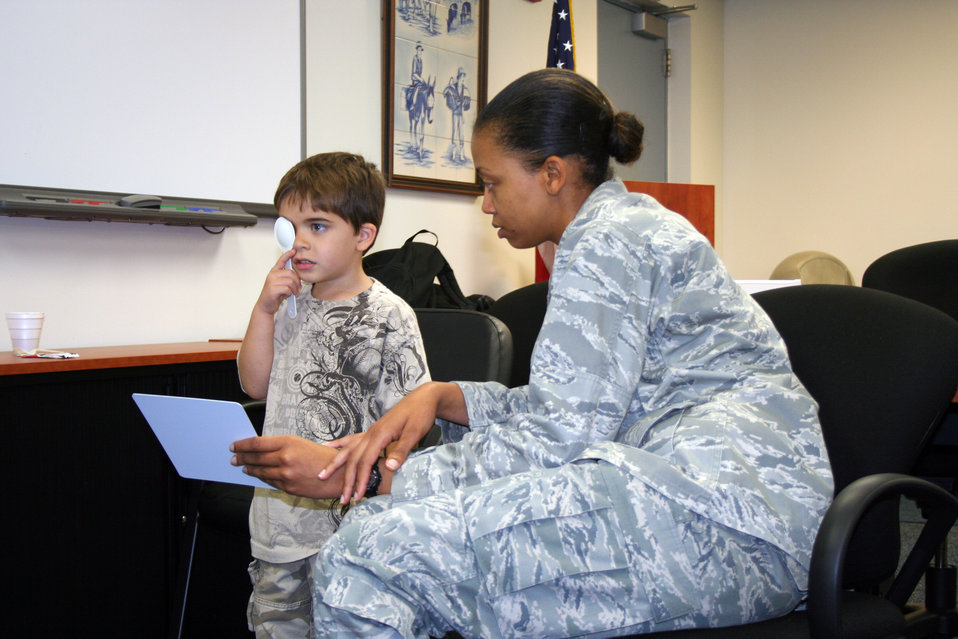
Lajes Field clinic hosts school, sports physical day

Capt. Stephanie King tests Louis Anchundia's vision during the school and sports physical day held Aug. 20 at Lajes Field, the Azores. Captain King is assigned to the 65th Medical Operation Support Squadron, and Louis is the son of Tech. Sgt. Donna Anchundia of the 65th Force Support Squadron.